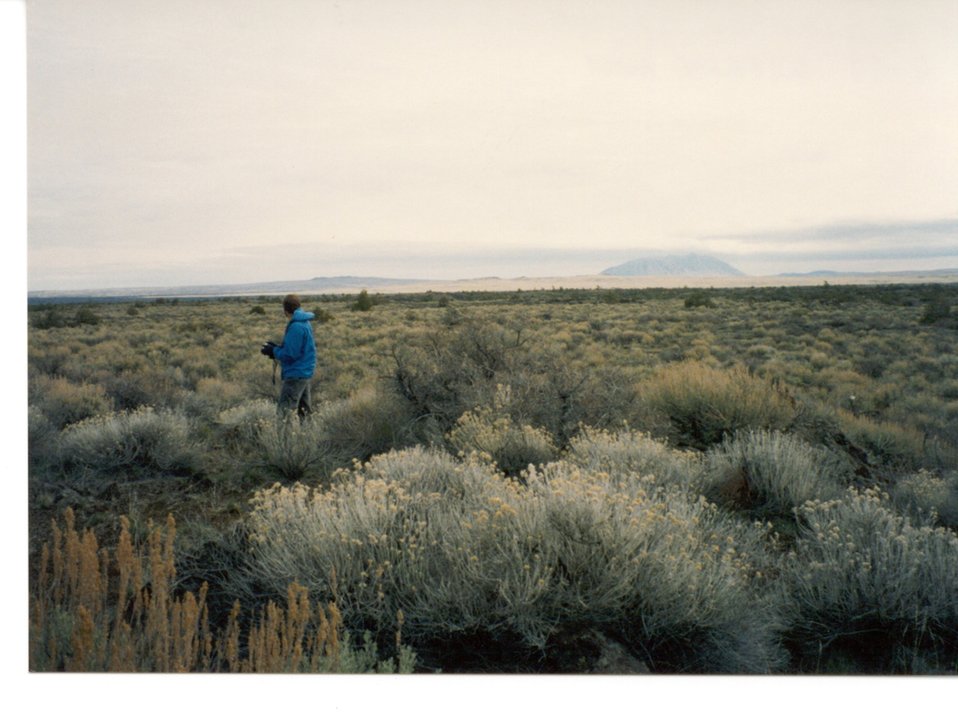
East of Black Tail toward Big Southern Butte Craters of the Moon Shoshone Field Office USRD Upper Snake River District